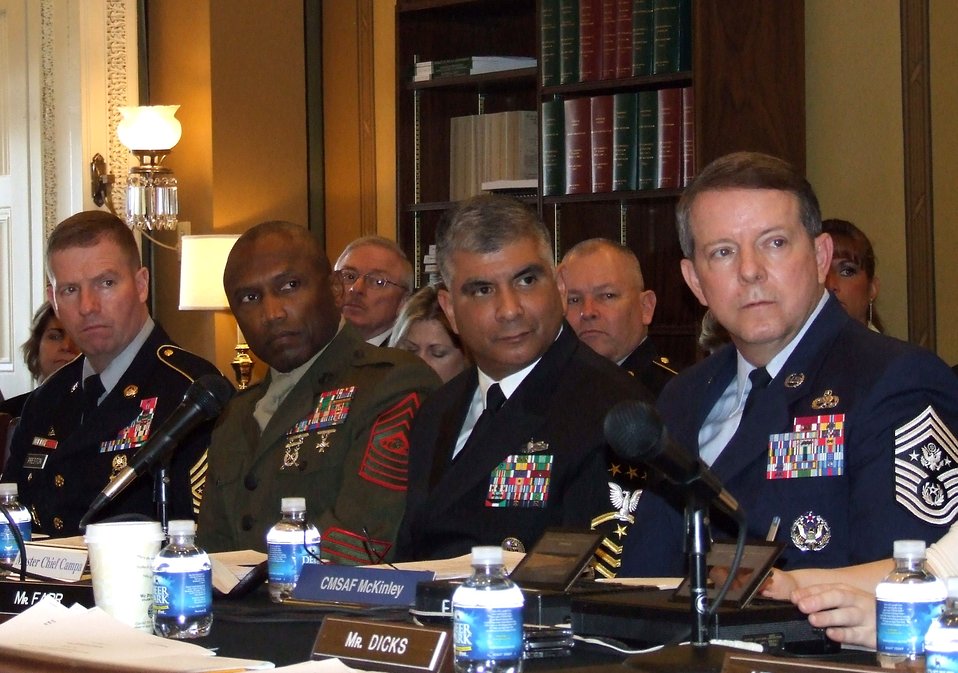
Chief McKinley testifies before Congress

Chief Master Sgt. of the Air Force Rodney J. McKinley, far right, testifies with other Armed Forces senior enlisted leaders before the House Appropriations Committee, Military Quality of Life and Veterans' Affairs Subcommittee Feb. 9 in Washington, D.C. As the Air Force's senior enlisted leader, Chief McKinley addressed quality of life, global combat and Air Force readiness issues with the subcommittee.